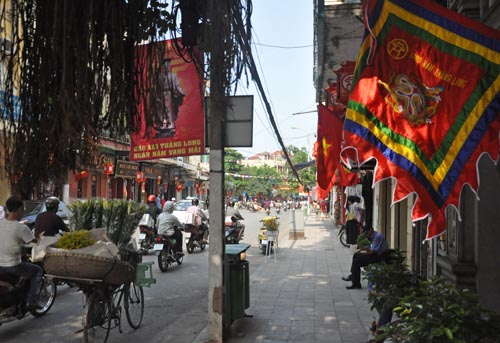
Hanoi celebrates 1,000 years as capital of Vietnam.